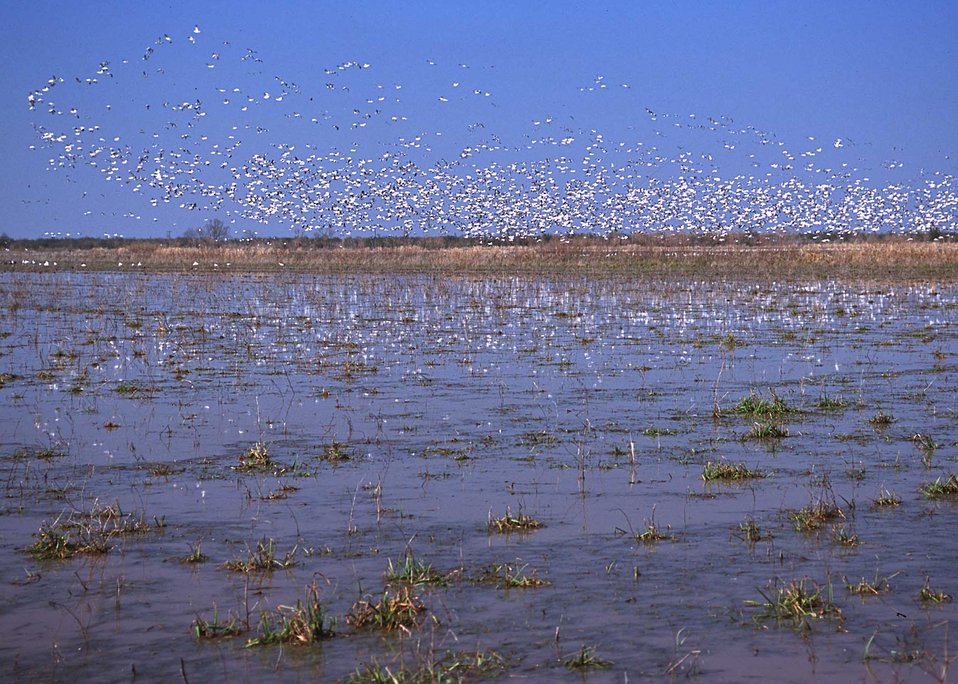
Flooded croplands near Gueydan, Louisiana attract thousands of geese in the winter.